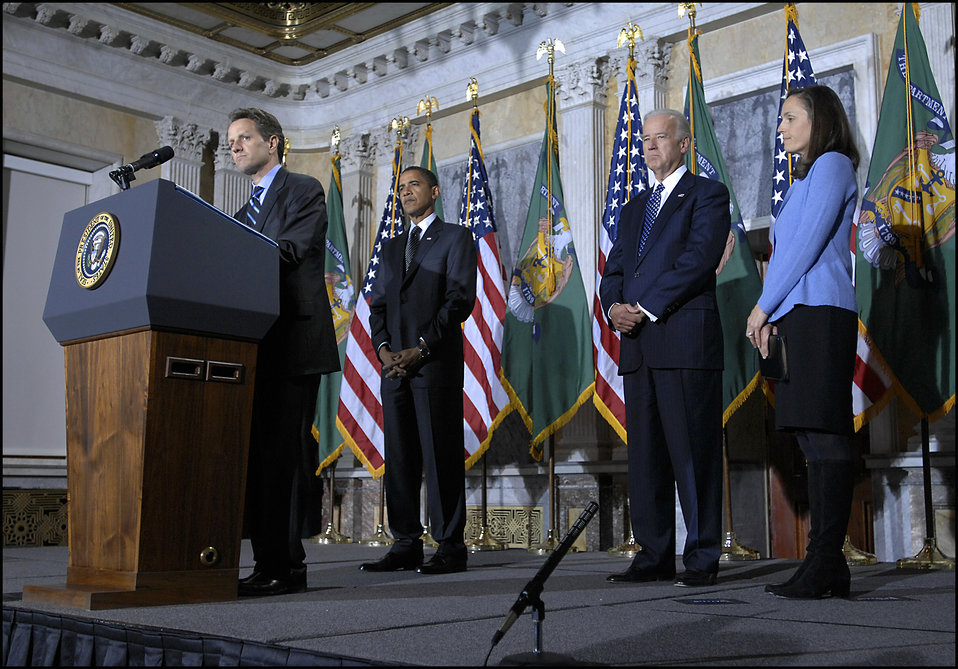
Secretary Geithner's swearing-in remarks

Secretary Timothy F. Geithner speaking at his swearing in ceremony on January 26, 2009.